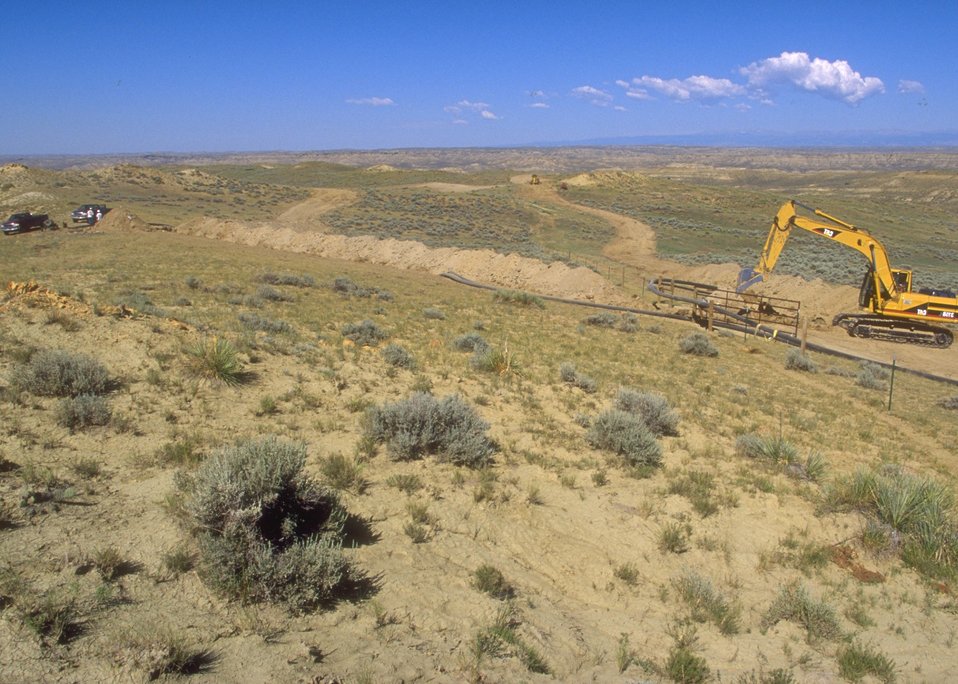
Construction for coal bed methane development, Buffalo Field Office.